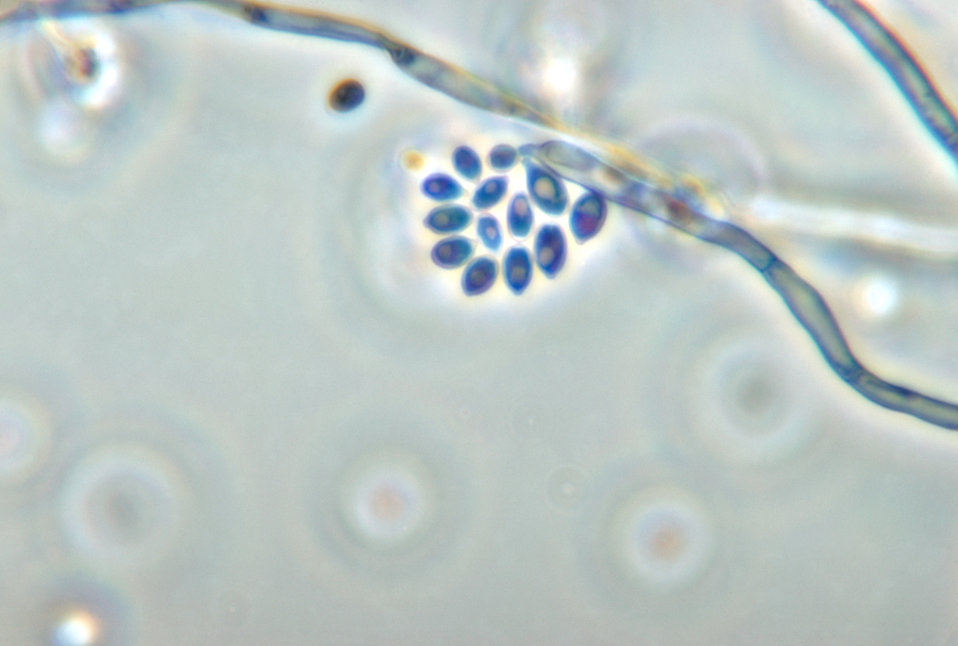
This micrograph depicts the conidia-laden conidiophore of the fungal organism Exophiala salmonis.